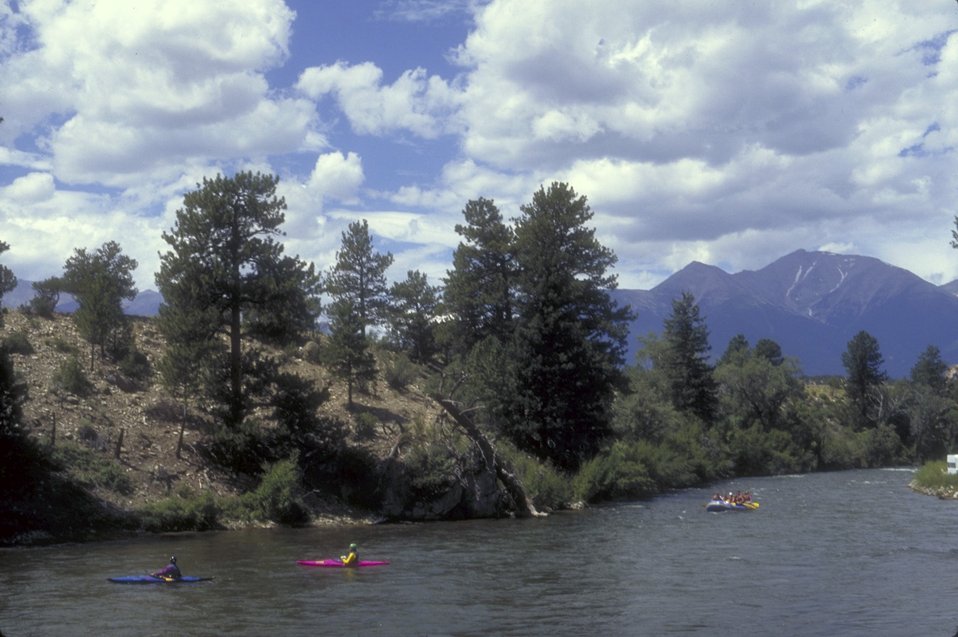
Kayaking on the Arkansas River.